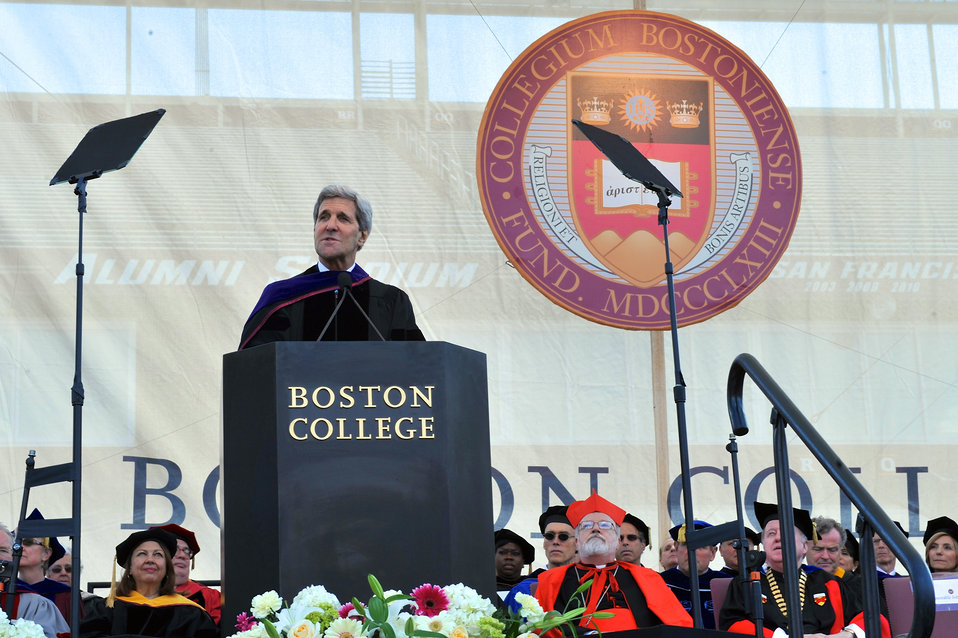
Secretary Kerry Addresses Boston College Class of 2014

U.S. Secretary of State John Kerry, a 1976 graduate of Boston College Law School, delivers the commencement address to the B.C Class of 2014 after receiving an honorary degree in Boston, Massachusetts, on May 19, 2014.